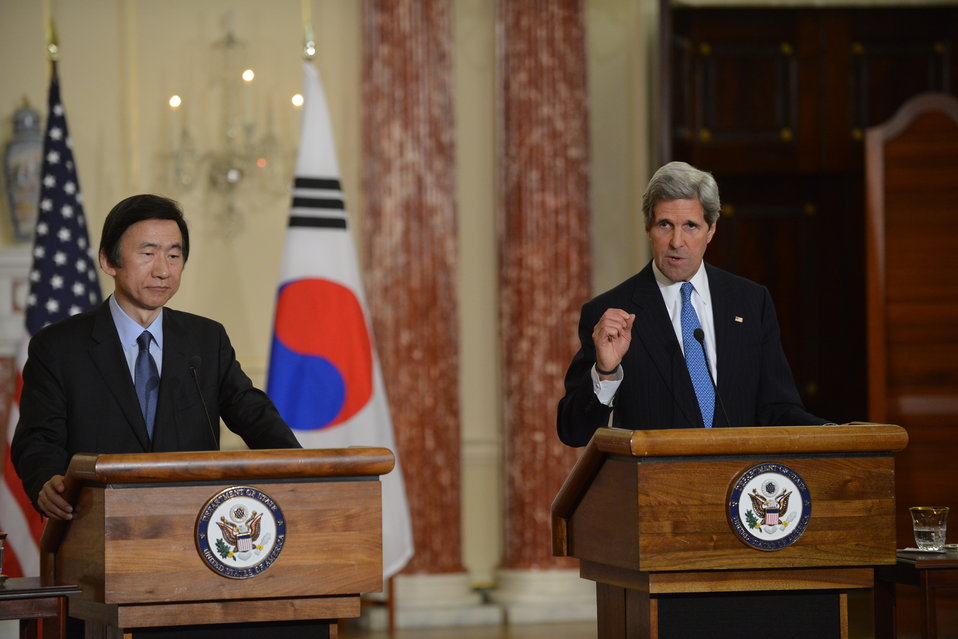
Secretary Kerry Meets With Minister Yun of the Republic of Korea

U.S. Secretary of State John Kerry and Foreign Minister Yun Byung-se of the Republic of Korea address reporters after their bilateral meeting at the U.S. Department of State in Washington, D.C., on April 2, 2013.